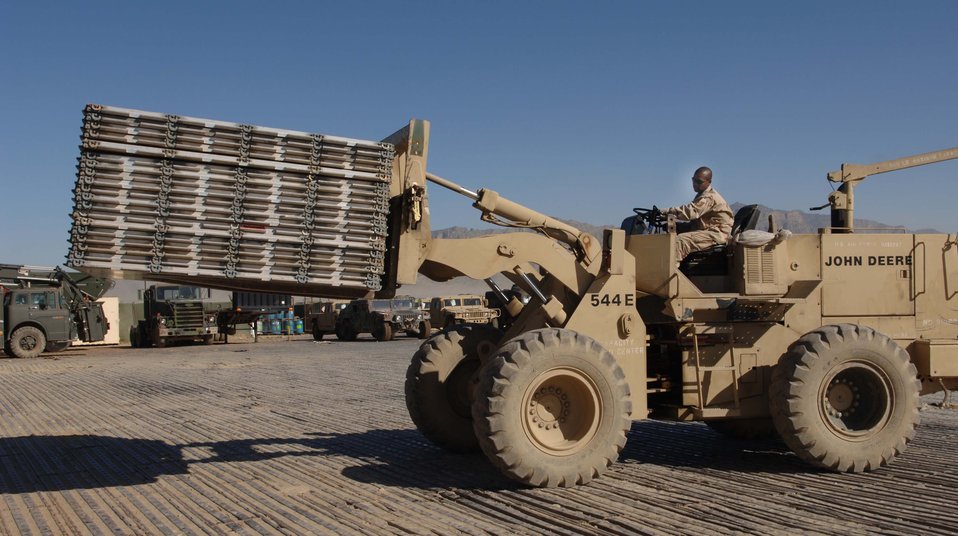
Pallet pursuit nets plentiful return

BAGRAM AIR BASE, Afghanistan -- Tech. Sgt. Milton Spivey moves pallets to the logistics storage yard for redistribution. Airmen from the 455th Expeditionary Logistics Readiness Squadron collected and returned 2,417 pallets and 4,489 net sets in three months.